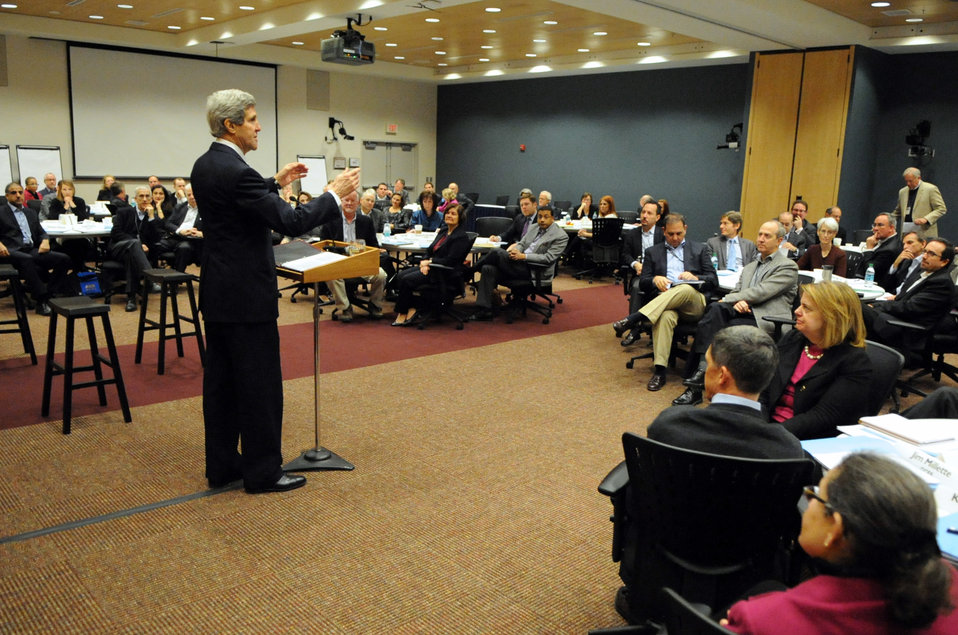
Secretary Kerry Addresses Senior Managers at Daylong Staff Retreat

U.S. Secretary of State John Kerry opens a daylong retreat for about 100 State Department senior managers during a gathering in Arlington, Virginia, on February 10, 2014.